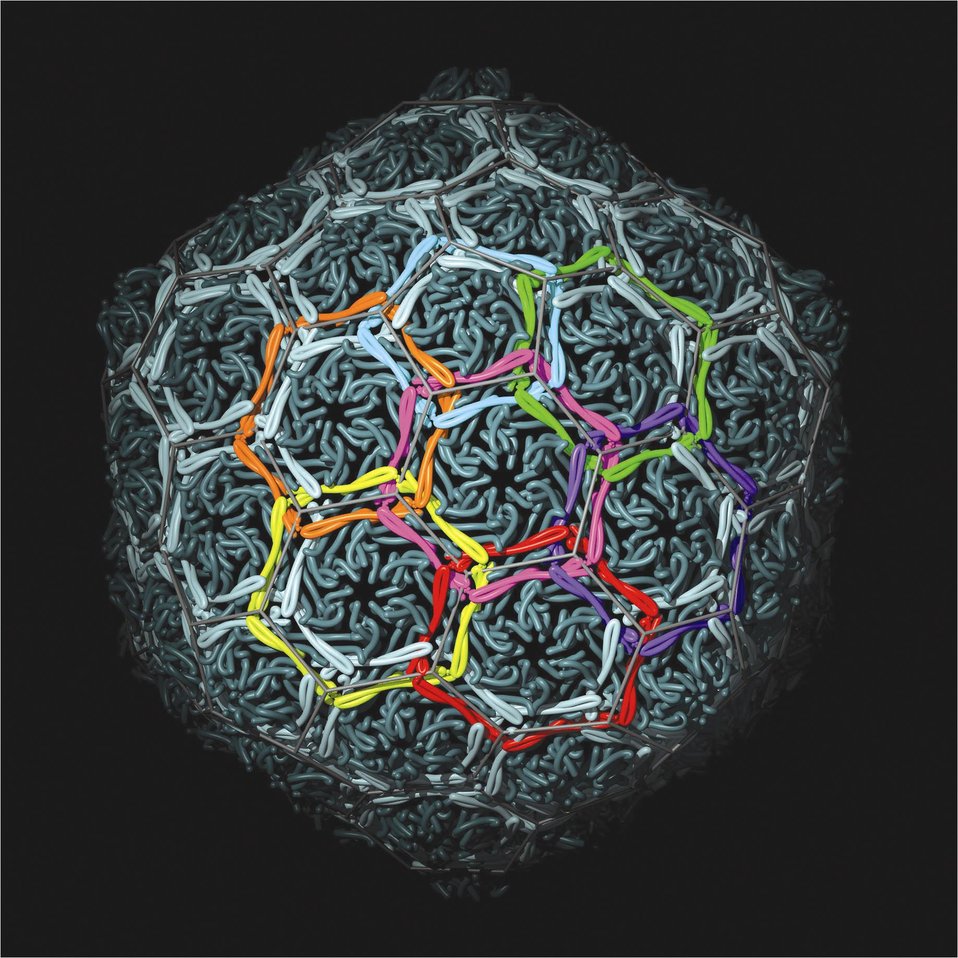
STRUCTURE OF BACTERIOPHAGE HK 97 DISCOVERED AT THE ADVANCED PHOTON SOURCE BIOCARS BEAMLINE.

THE ADVANCED PHOTON SOURCE IS ONE OF ARGONNE'S GREATEST RESOURCES. DISCOVERIES HERE VARY FROM THE FIELDS OF STRUCTURAL BIOLOGY TO NANOTECHNOLOGY AND EARTH SCIENCES. THE STRUCTURE OF THE BACTERIOPHAGE HK 97 WAS DISCOVERED AT THE ADVANCED PHOTON SOURCE BIOCARS BEAMLINE. THE THREE-DIMENSIONAL IMAGE SHOWED RESEACHERS THAT NATURE USES A CHAIN MAIL-LIKE ORDER TO PROTECT THIS VIRAL GENOME'S INTERIOR.